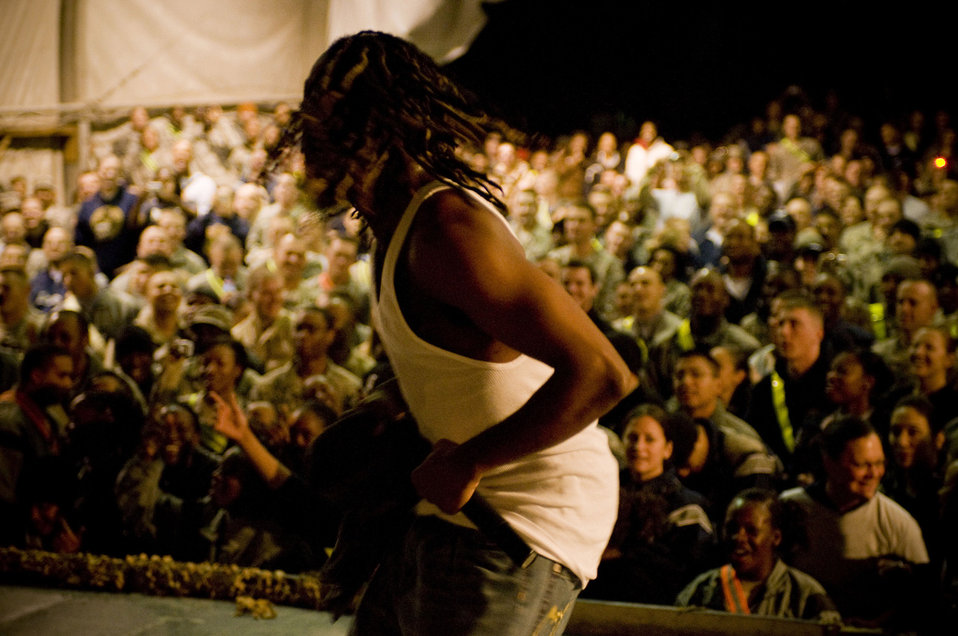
Around the world in 8 days

Kaine of the rap group Yin Yang Twins performs Nov. 13 at Bagram Airfield, Afghanistan. The Yin Yang Twins were part of the USO Tour entitled